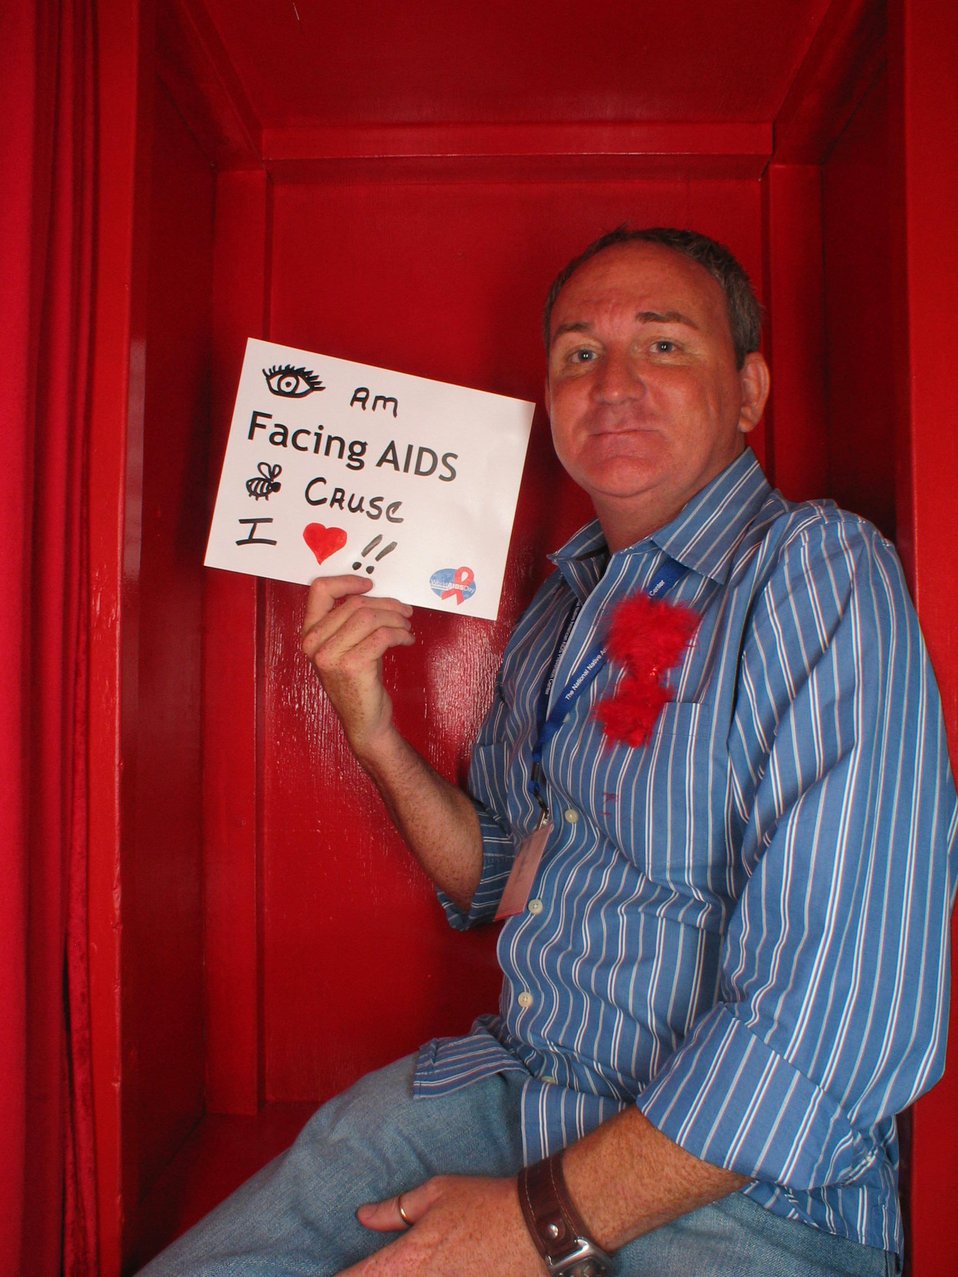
I am Facing AIDS because I love.